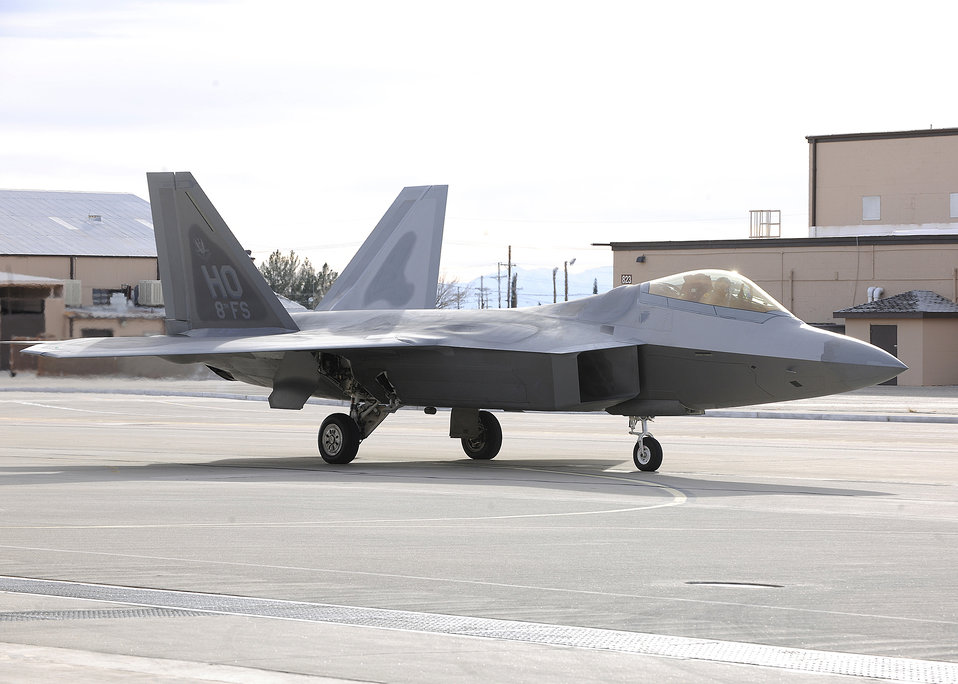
8th FS flagship arrives

Lt. Col. Craig Baker taxis Dec. 21, 2009, the first F-22 Raptor assigned to the 8th Fighter Squdaron into a hangar at Holloman Air Force Base, N.M. The pilots and maintainers of the 8th FS will work hand-in-hand with the 7th Fighter Squadron until the unit deploys next summer. Colonel Baker is the 8th Fighter Squadron commander.